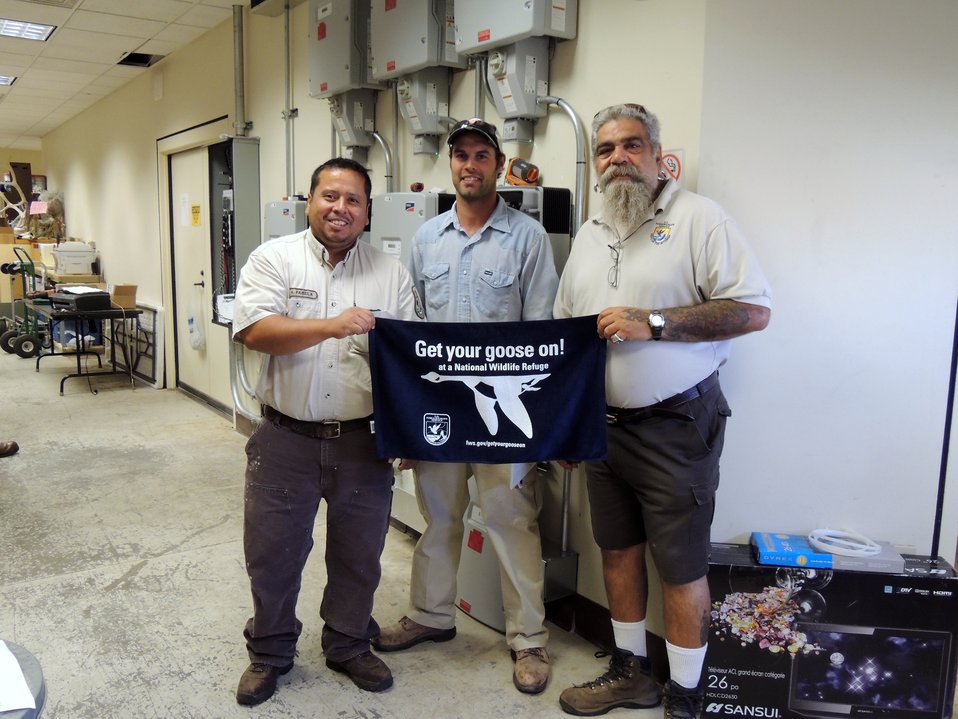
Get Your Goose On!

Wichita Mountains National Wildlife Refuge in Oklahoma.